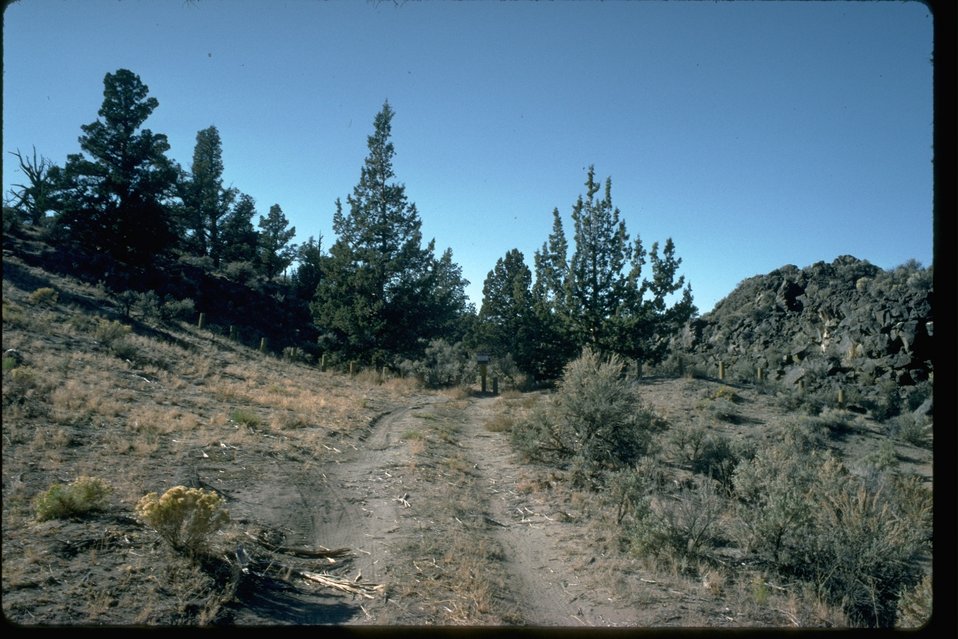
A road in the lava beds in the Badlands Wilderness Study Area. OR 5-21